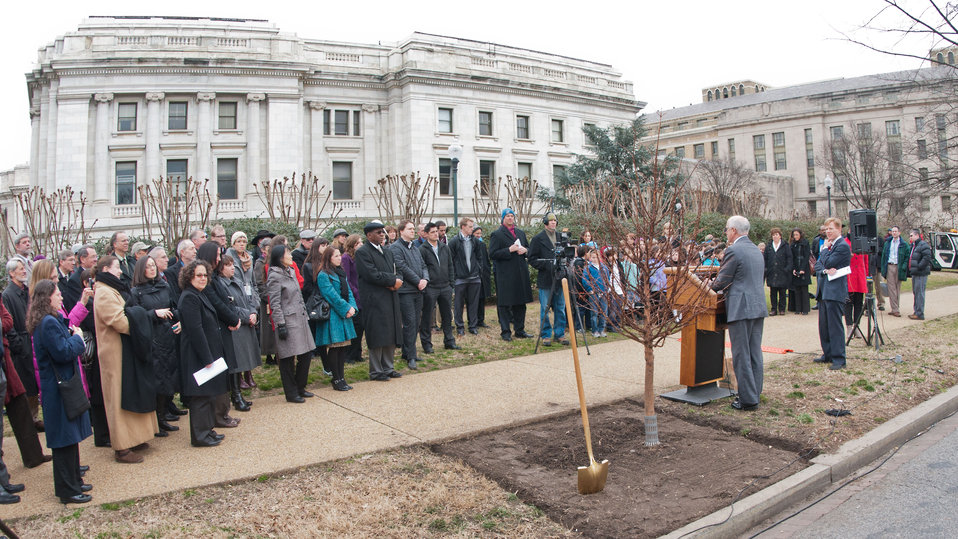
United States Department of Agriculture (USDA) Under Secretary Natural Resources and Environment Harris Sherman (left), next to the freshly planted Dawn Redwood for the Celebration of Tu B’Shevat “The New Year of the Trees” event; the 3rd Grade Class of the Jewish Primary Day School of the Nation’s Capital and other addressed the attendees at the District of Columbia western lawn next to the USDA Headquarters, Whitten Building at 14th Street and Independence Ave SW, Washington, D.C. on Wednesday, February 8, 2012.